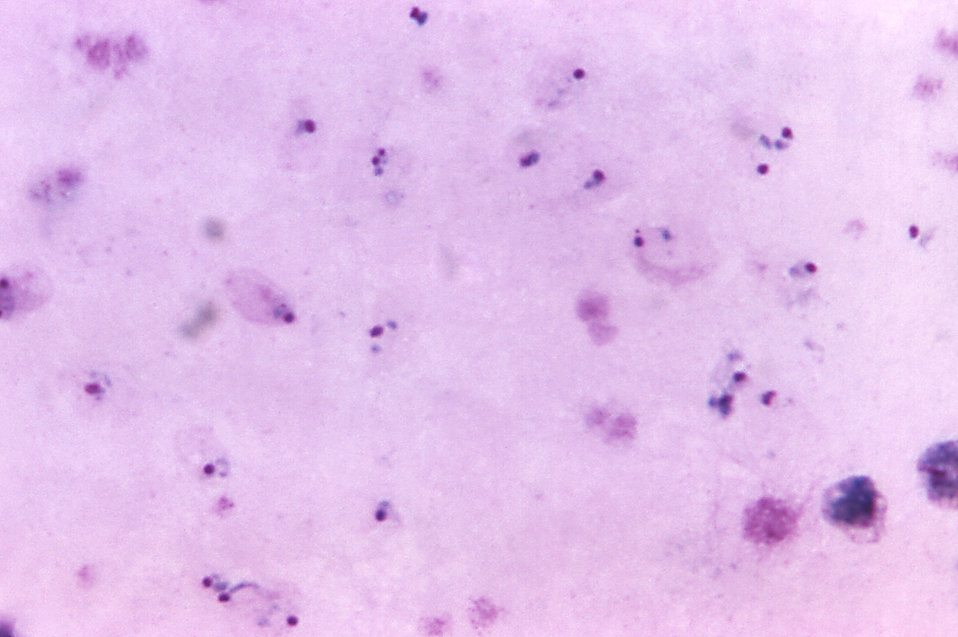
This thick film micrograph depicts a number of P. vivax rings and an old trophozoite using Giemsa stain; Magnified 1125X.